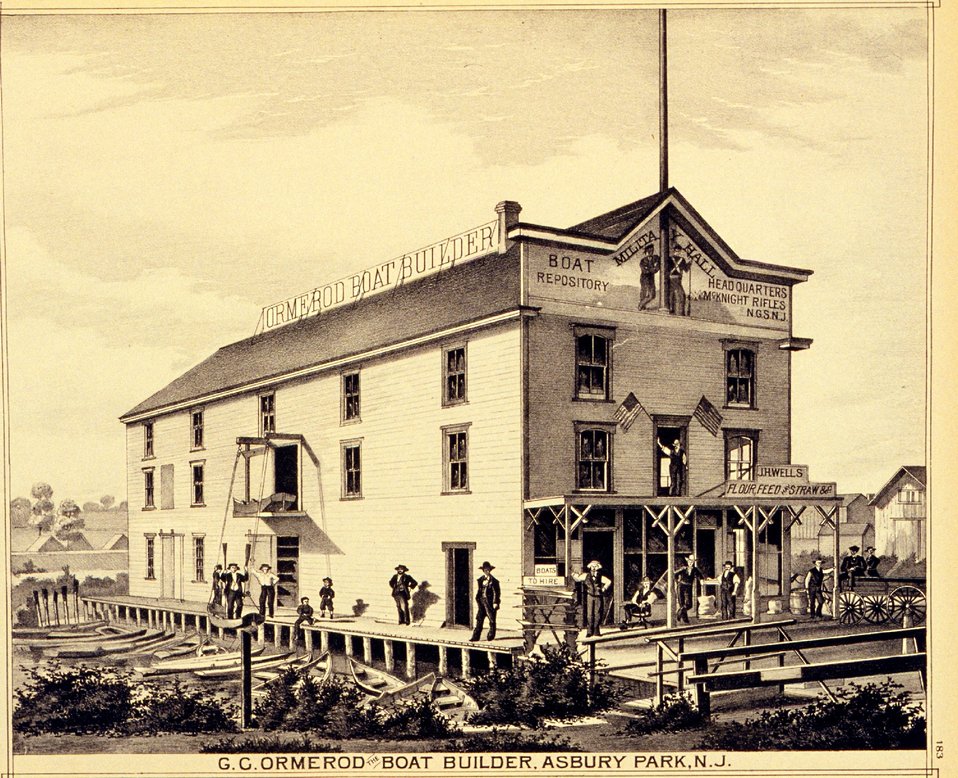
G. C. Ormerod, Boat Builder, Asbury Park, New Jersey. P. 183. 'Historical and Biographical Atlas of the New Jersey Coast,' by T. F. Rose, 1878.